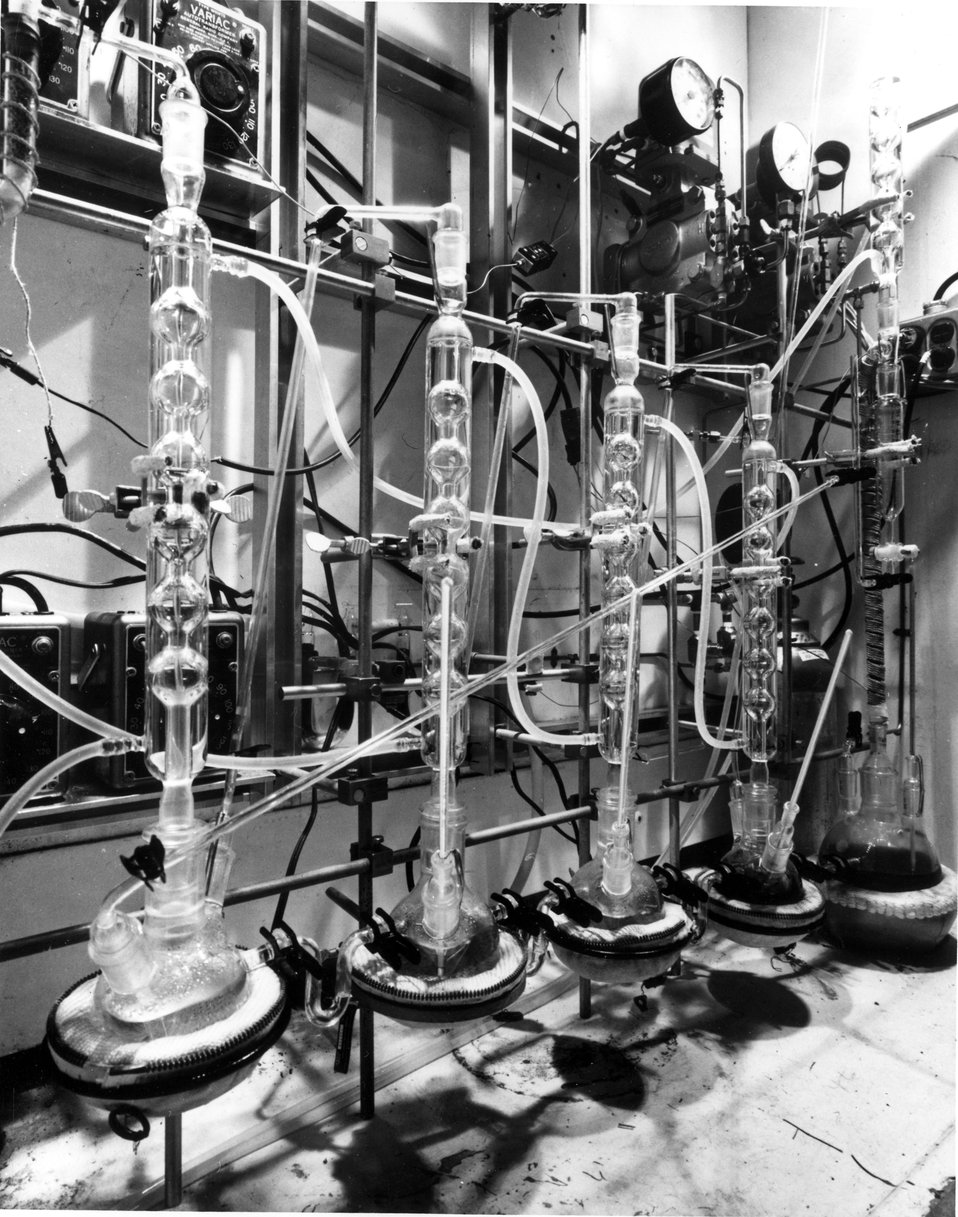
In line with minimizing the release of radionuclides to the environment, highly efficient procedures are being developed for removing radioactive fission products from liquid and gaseous plant effluents. c. 1972